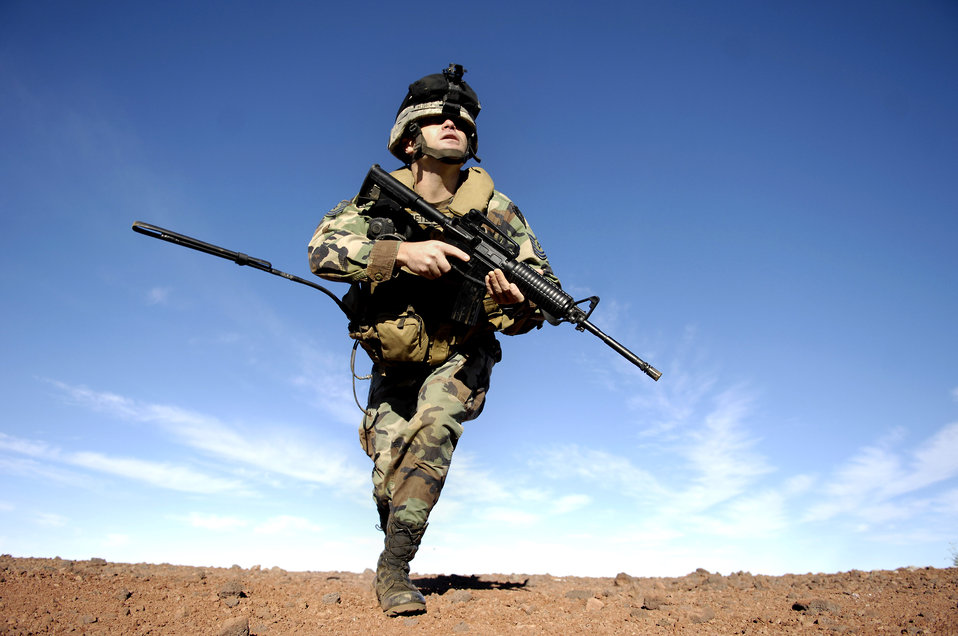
TACPs participate in excercise

Tech. Sgt. Rick Setlock moves to another firing position during training Oct. 23 at the Pohakuloa Training Area on the big island of Hawaii. Sergeant Setlock is a tactical air control party member from the 25th Air Support Operations Squadron, Wheeler Army Airfield, Hawaii. The TACPs are training as part of the Koa Lighting exercise where bombers fly from Guam and practice their targeting.